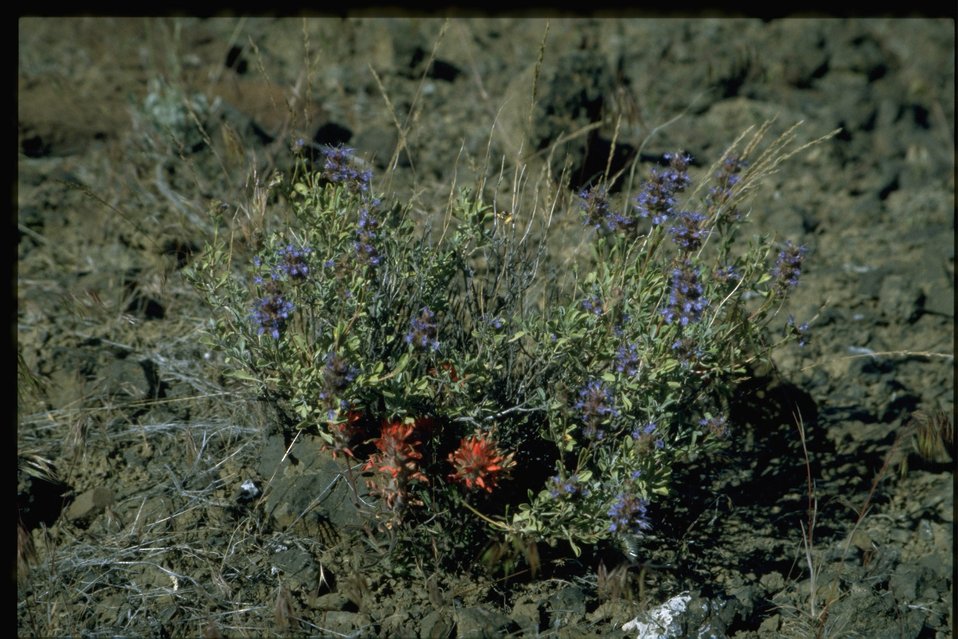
Farshot of Purple sage (Salvia dorrii) with desert paintbrush (Castilleja chromosa).